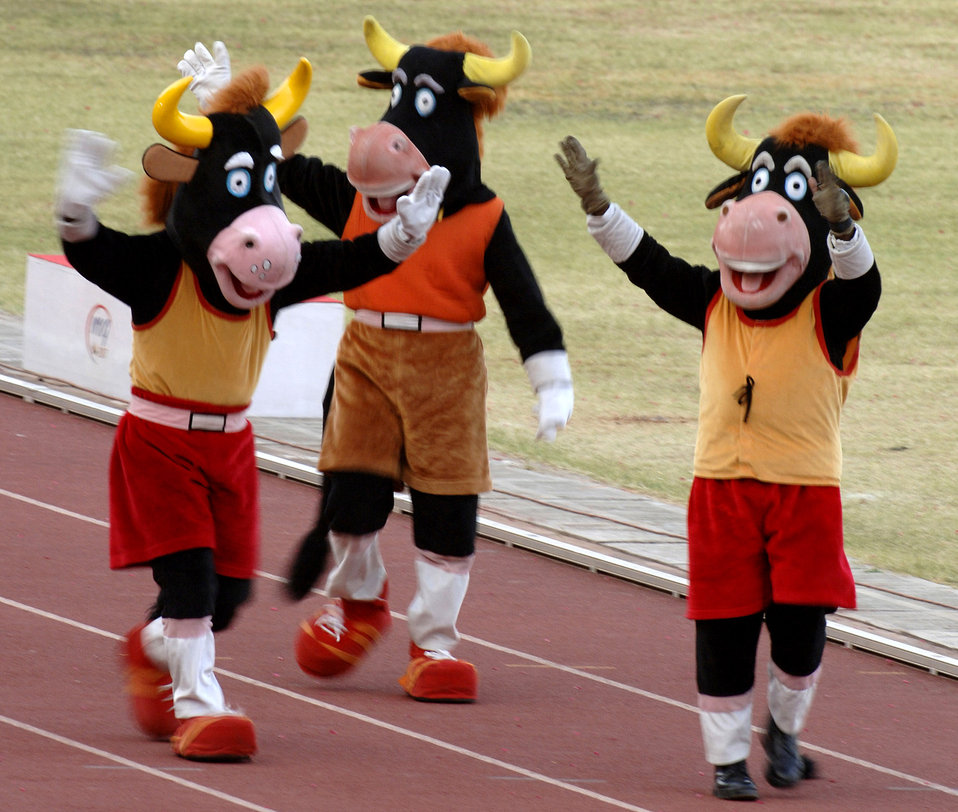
4th CISM World Military Games

The great Indian bison, known as Gaur, is the mascot for the 4th Conseil Internationale du Sport Militaire Military World Games, set in Hyderabad, India, Oct. 14 to 21. This is the largest international military Olympic-style event in the world. In this fourth edition of the games, 103 countries and more than 5,000 athletes are competing Oct. 14 to 21 in boxing, diving, soccer, handball, judo, military pentathlon, parachuting, sailing, shooting, swimming, volleyball and track and field. The purpose of the Military World Games is to promote